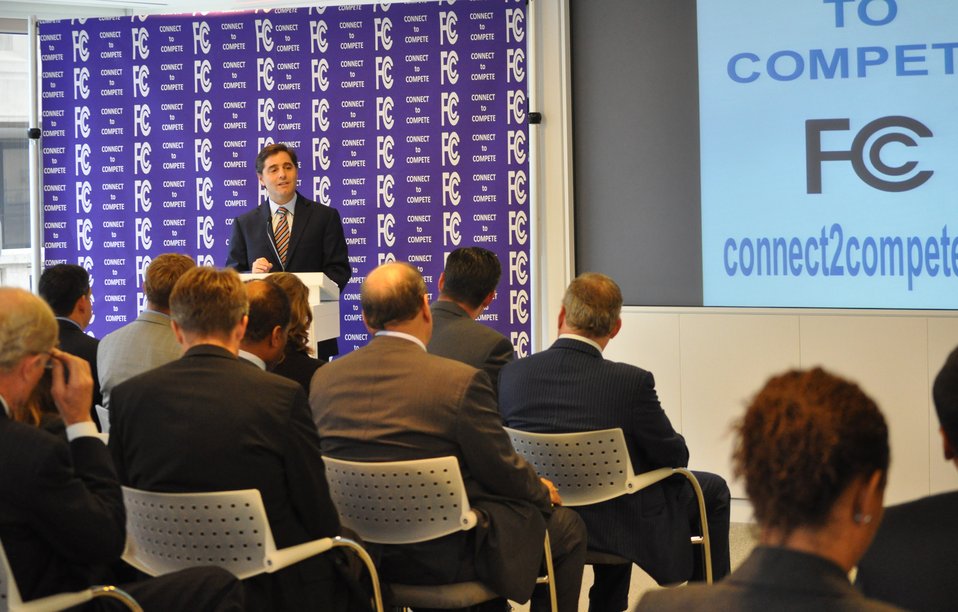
Connect to Compete

Chairman Genachowski spoke at the Pew Charitable Trust to announce Connect to Compete, a new public-private initiative to tackle broadband adoption. October 12, 2011